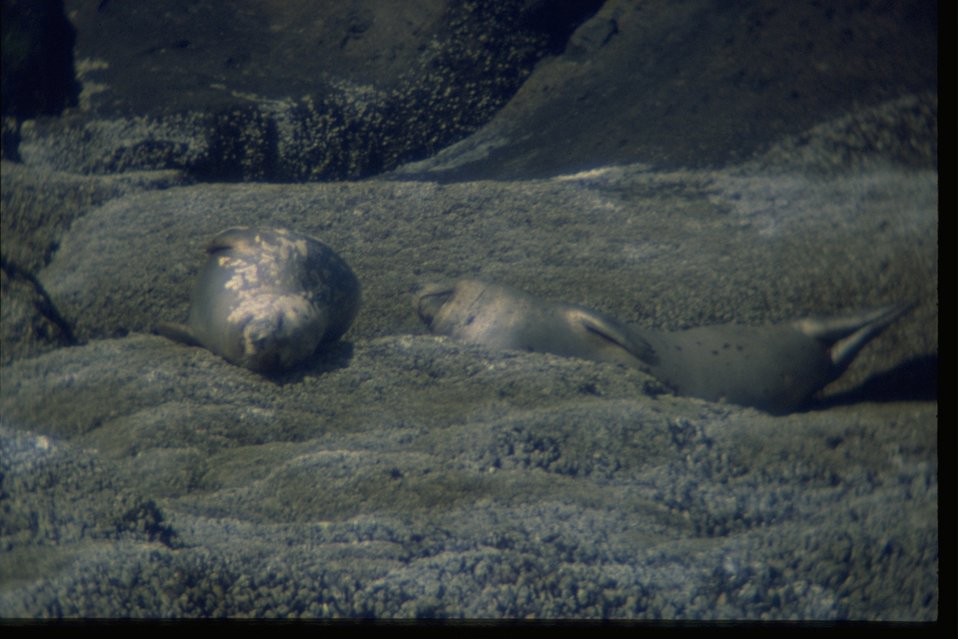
Pacific Harbor Seals at the Yaquina Head ONA.